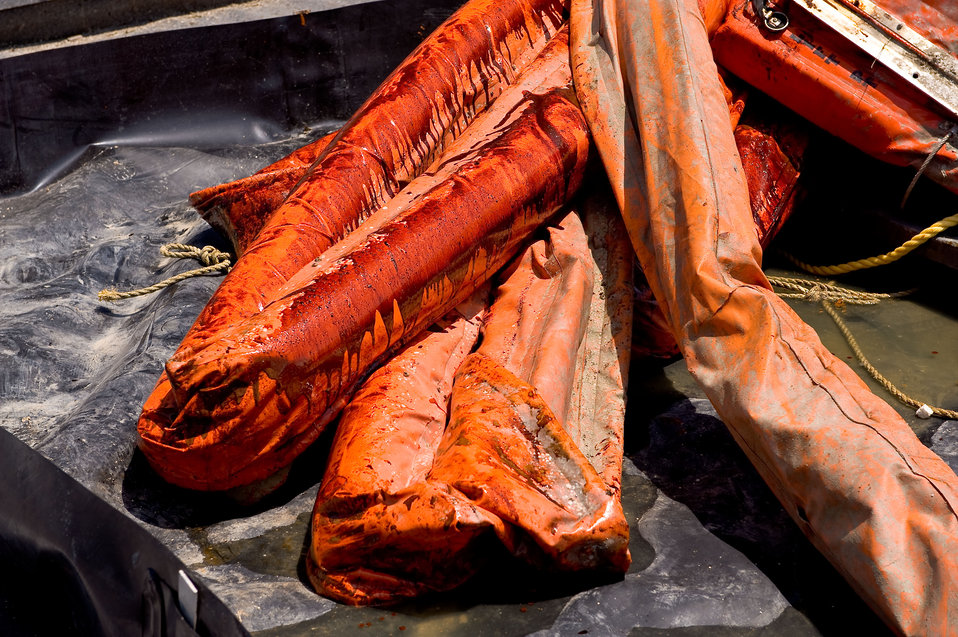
August 6, Used oil boom ready for washing

Used boom is brought to a decontamination area where it's washed and inspected for potential reuse. The wash water is collected and pumped into tanks for transport to a waste facility.